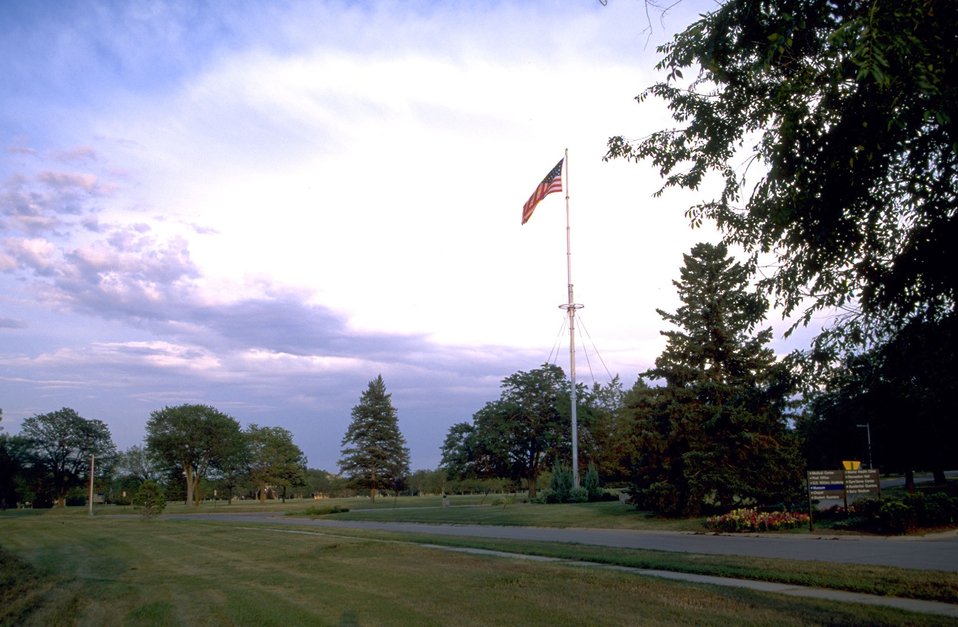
Fort Meade Parade Ground